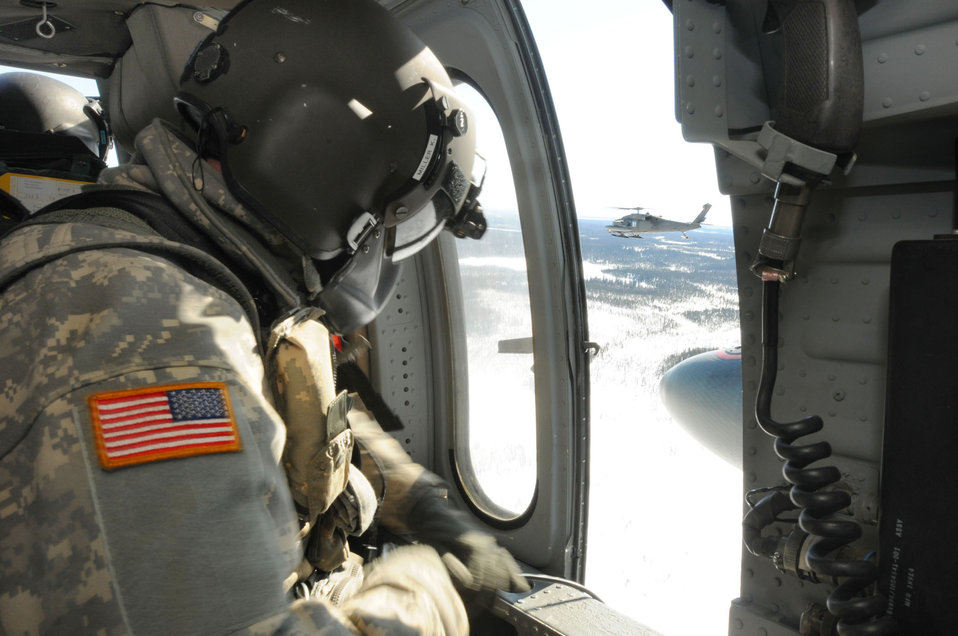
Arctic Care

An Alaska Army National Guard crew chief maintains watch during a resupply mission April 16, 2011, in support of Operation Arctic Care 2011.